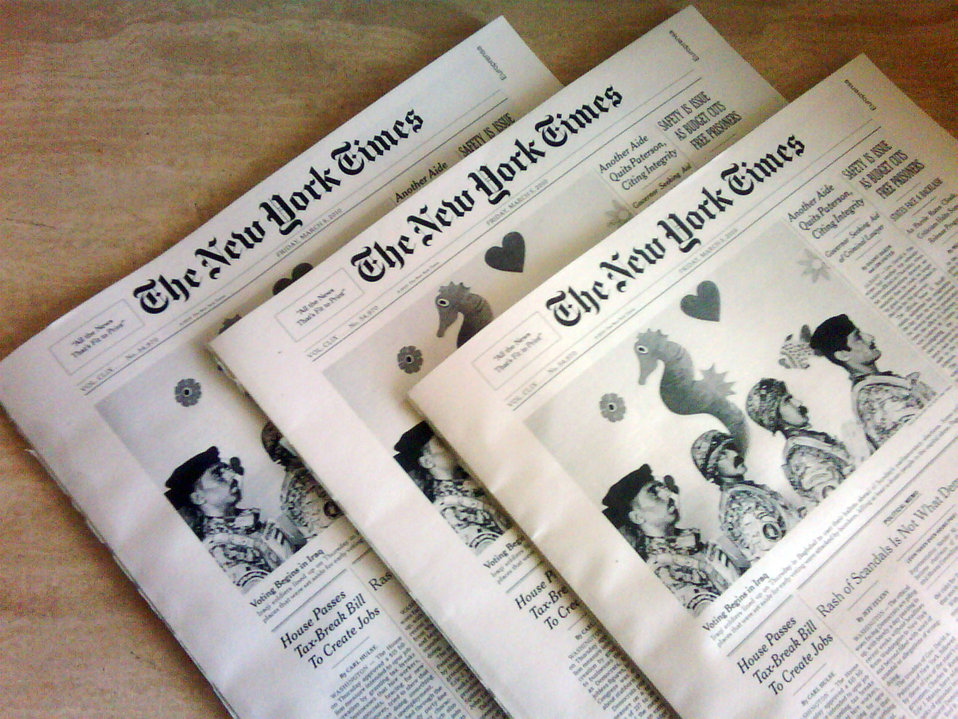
Traveling Team's Newspapers

Examples of newspapers during the traveling team's trip in San Jose, Costa Rica, March 5, 2010.